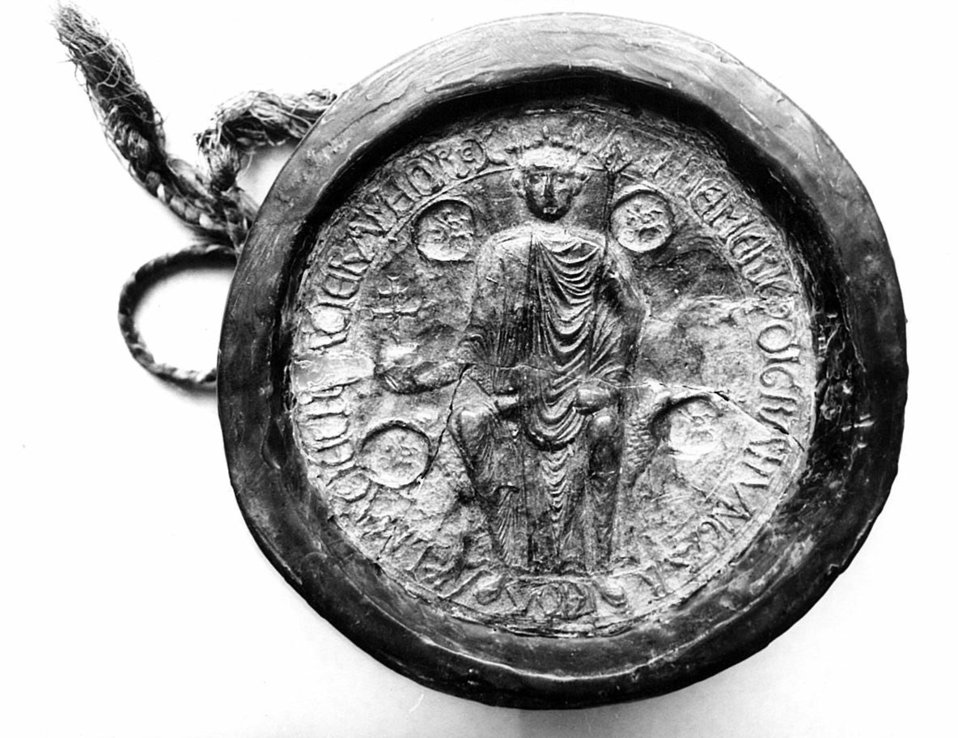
Deutsch: Siegel von 1203